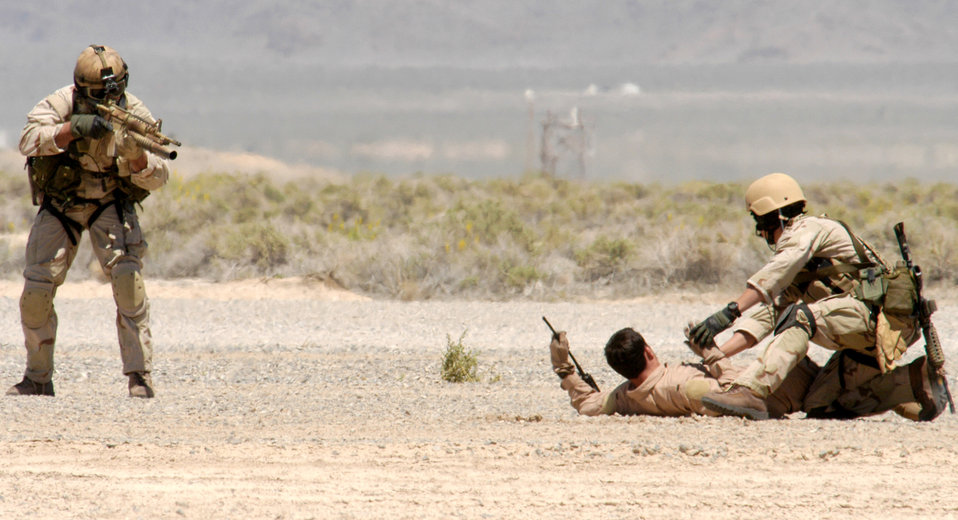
Downed on the range

NELLIS AIR FORCE BASE, Nev. -- Pararescuemen from the 58th Rescue Squadron move in to rescue a downed pilot during a firepower demonstration on the bombing range here May 12. The firepower demonstration gave local civic leaders a bird's-eye view of some of the Air Force's capabilities in a wartime environment.